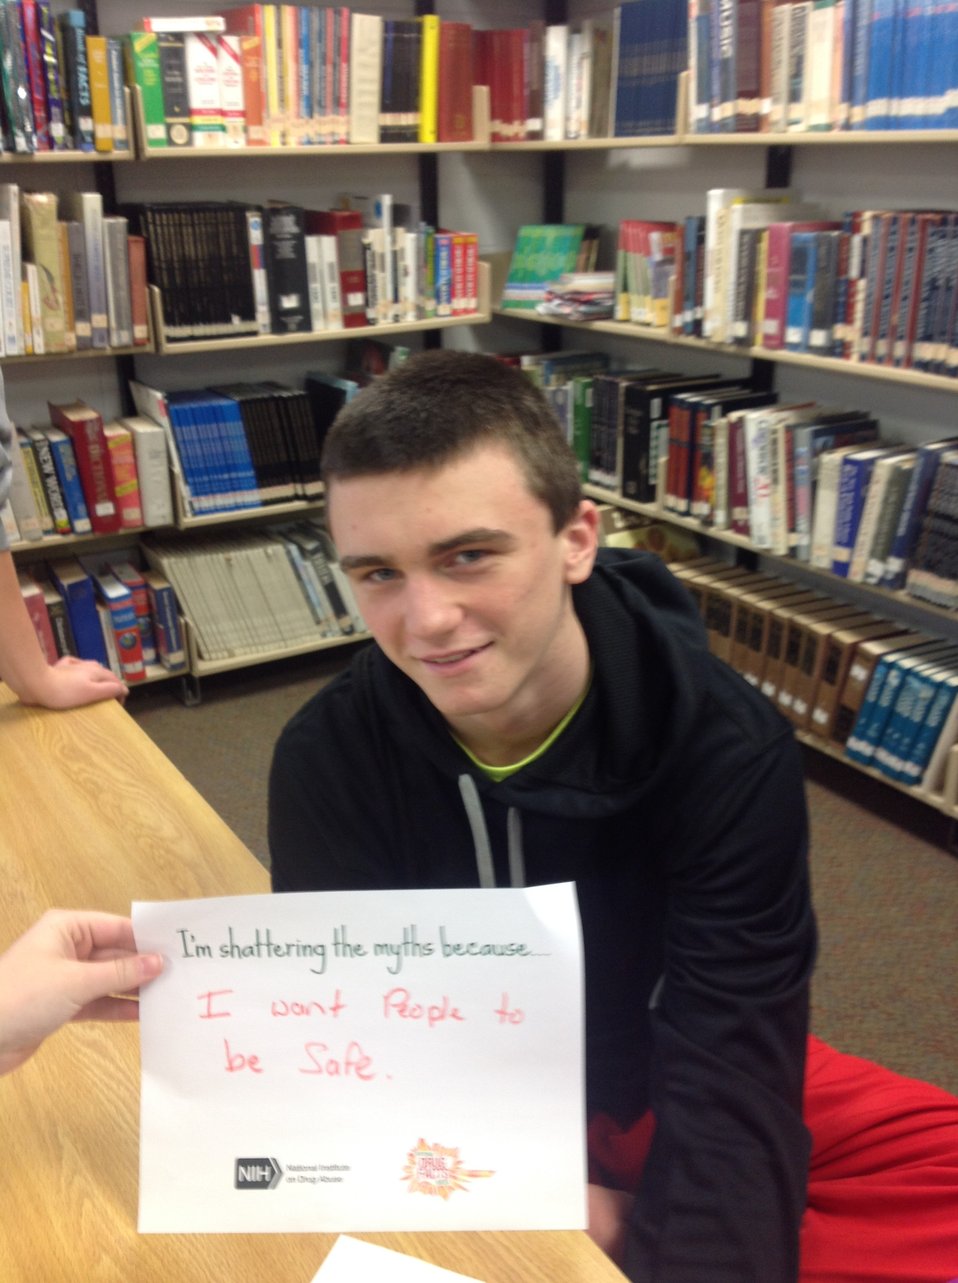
I'm Shattering the Myths Because...

Teenagers from the Van Buren County SAFE Coalition's, Youth Leadership Council (YLC) in Keosauqua, Iowa participate in various events during National Drug Facts Week, 2014.